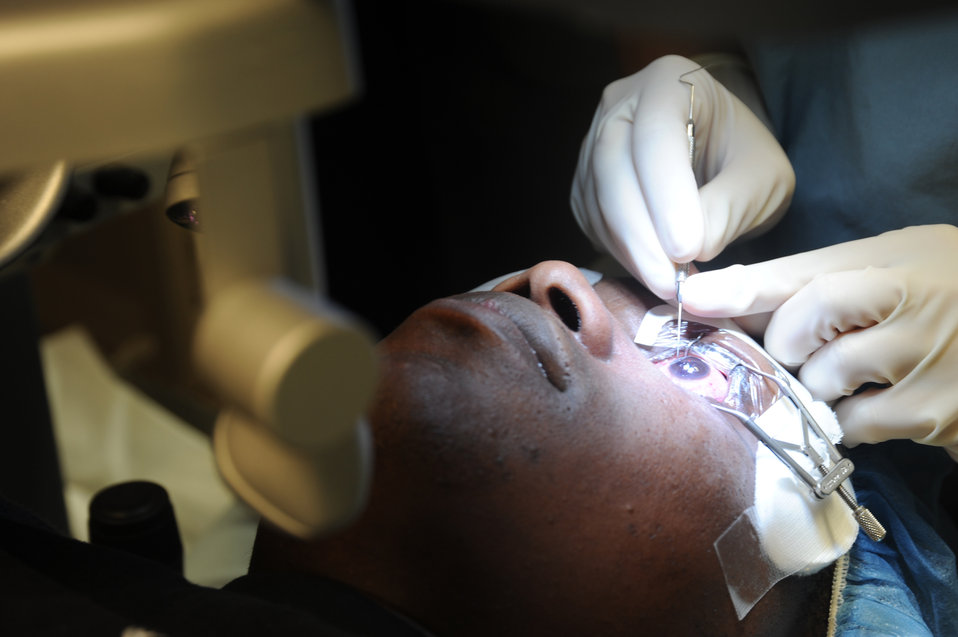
WMHC LASIK

Maj. (Dr.) Vashuda Panday lifts the corneal flap of Army Staff Sgt. Stanley Arnold as a step in his LASIK refractive surgery March 3, 2011, at Lackland Air Force Base, Texas. Dr. Panday is the chief of cornea refractive surgery at the Joint Refractive Surgery Center and Sergeant Arnold is an instructor and infantryman at Ft. Huachuca, Ariz.